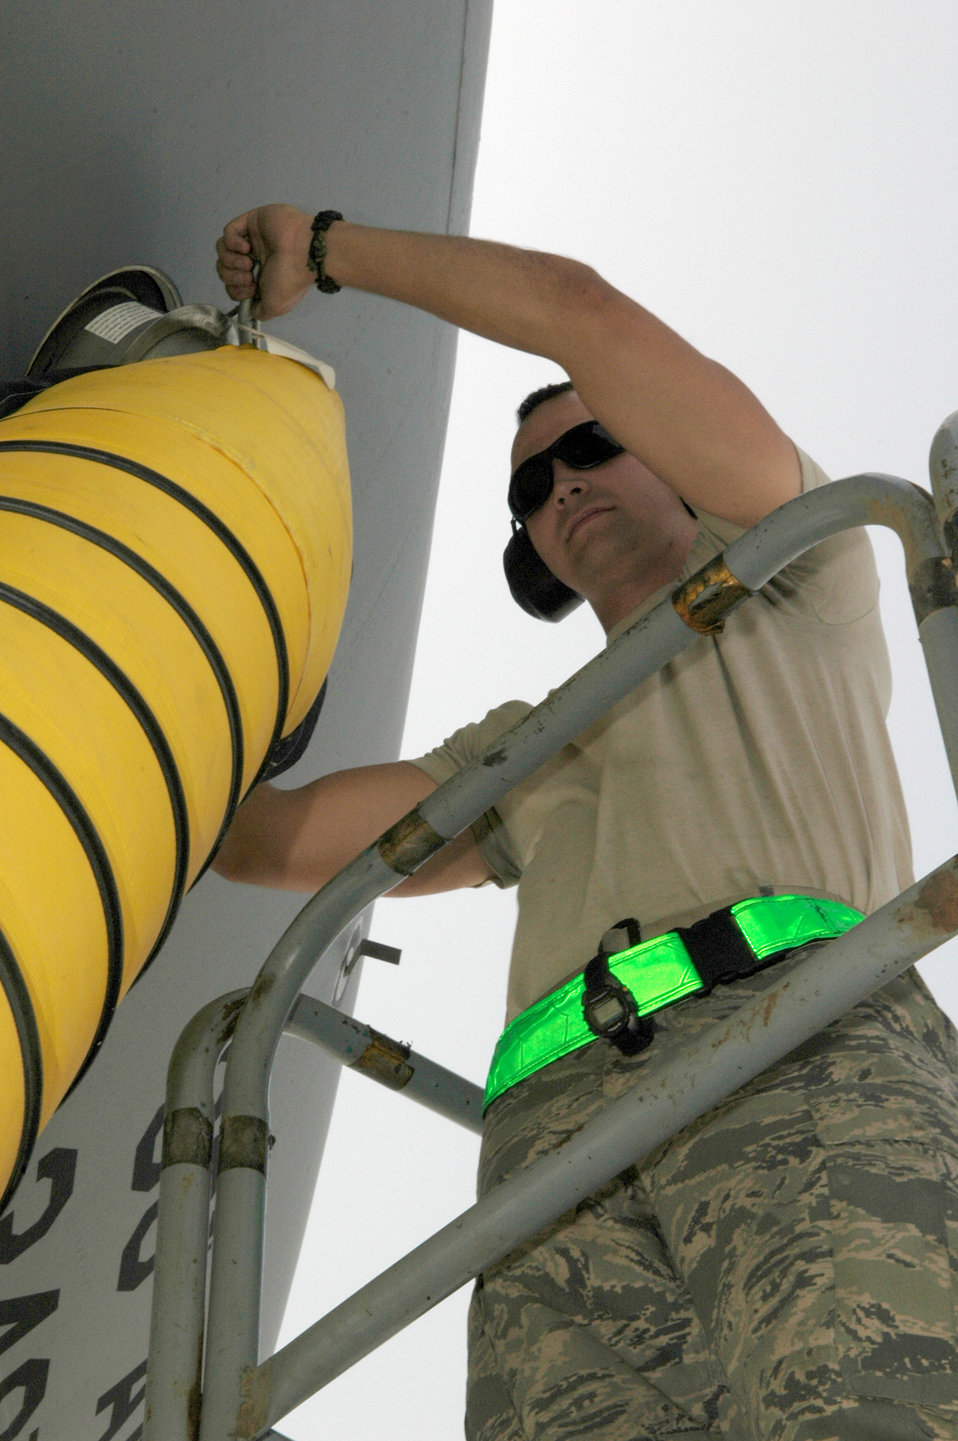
KC-10 in Southwest Asia

Airman 1st Class Matthew Haynes seals an air cart hose to the side of a KC-10 Extender May 18, 2011, in Southwest Asia. Airman Haynes is a crew chief assigned to the 380th Expeditionary Aircraft Maintenance Squadron.